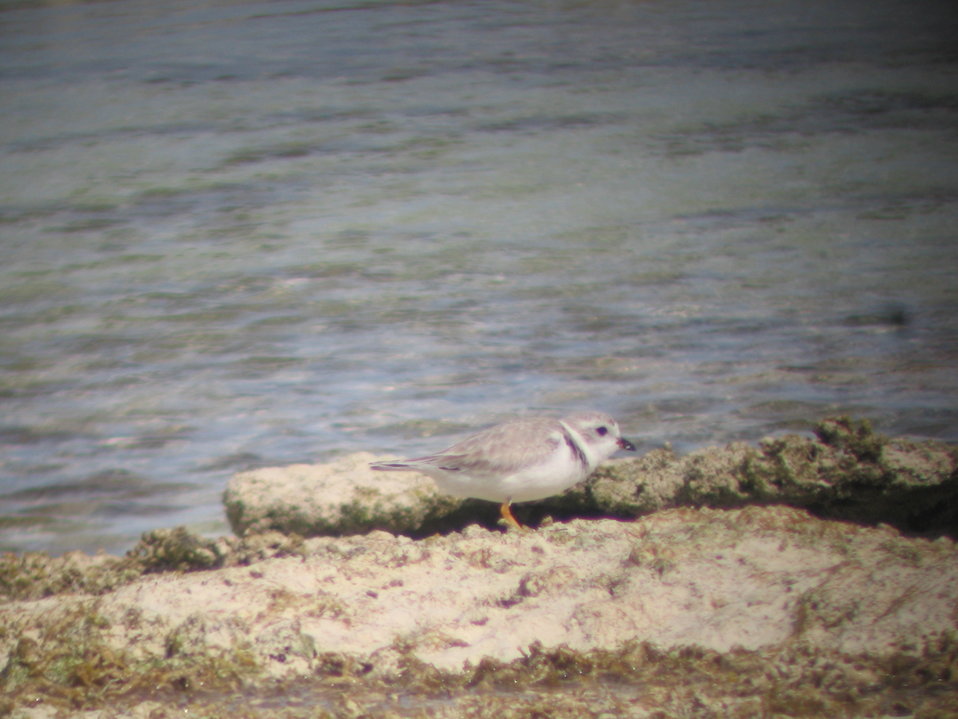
Piping plover foraging in rocky intertidal zone

Photo taken at South Andros Island.